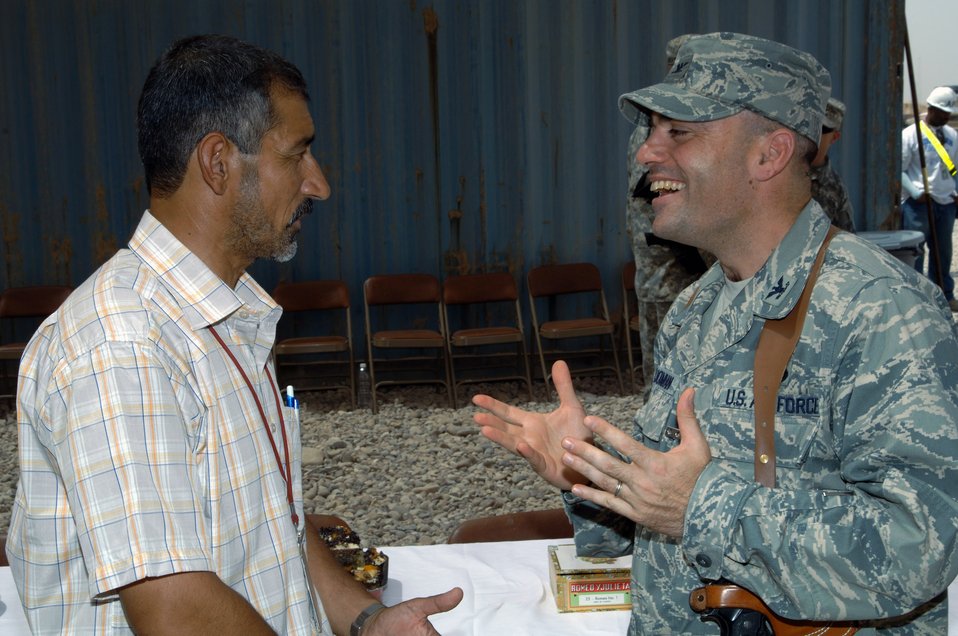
Iraqis sign container contract with Joint Base Balad

Hashim Abd Al-Amir Mahdi and Col. Sal Nodjomian converse after a ribbon-cutting ceremony to mark the signing of an Iraqi First contract in the Joint Base Balad Iraqi-based Industrial Zone here Aug. 21. The Miran Co. is establishing an I-BIZ business on base that will create approximately 70 jobs for Iraqis in six months. Colonel Nodjomian is the 332nd Expeditionary Mission Support Group commander.